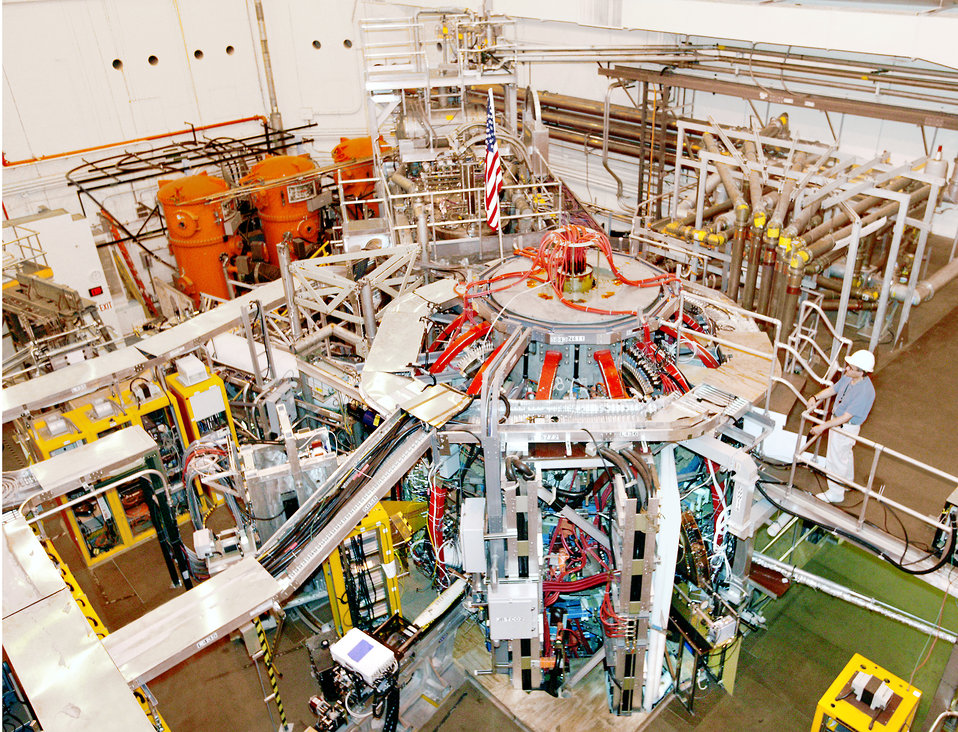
THE NATIONAL SPHERICAL TORUS EXPERIMENT.

The National Spherical Torus Experiments is an innovative magnetic fusion device that was constructed the Princeton Plasma Physics in collaboration with the Oak Ridge National Lab, Columbia University and the University of Washington at Seattle. NSTX will be used to study the physics principles of spherically shaped plasmas-hot ionized gases which nuclear fusion will occur under the appropriate conditions of temperature, density, and confinement in a magnetic field.